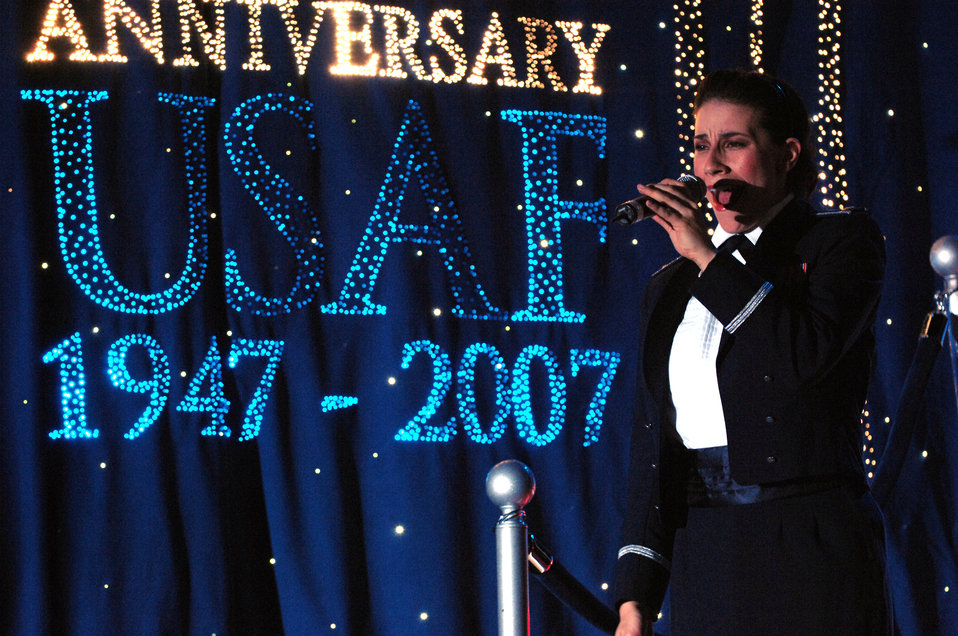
Tops in Blue Airmen strut their stuff

A Tops in Blue Airman sings to the crowd May 24 at the Tays Center near Holloman Air Force Base in Alamogordo, N.M. The 40-member group's goal is to enhance mission productivity for Air Force members around the world. Tops in Blue showcases music, dance and comedy, all performed by active-duty Airmen who perform 90 minutes of non-stop live entertainment.